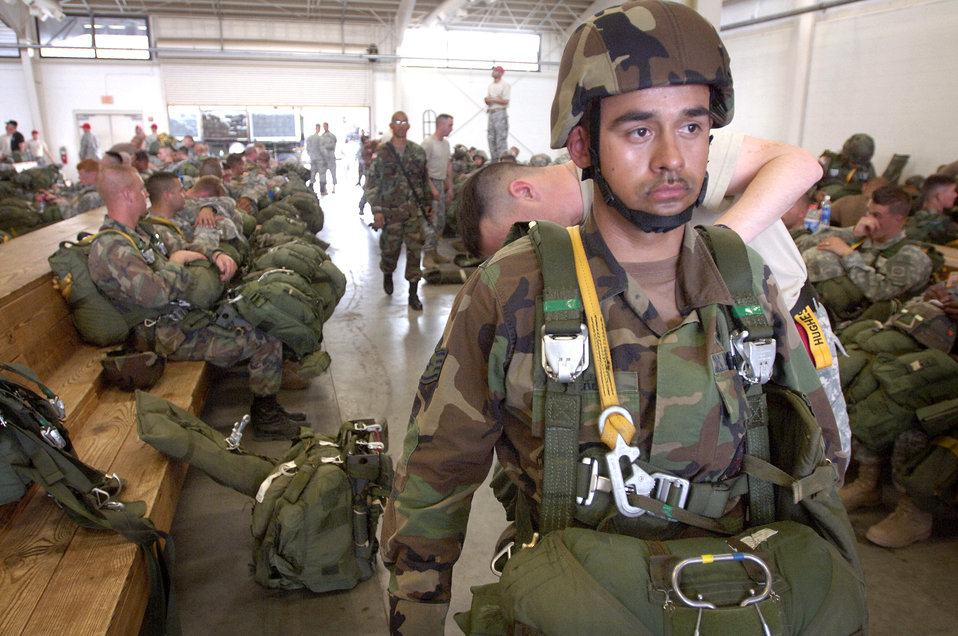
Airborne Airmen, Soldiers train together

Staff Sgt. Flavio Perez has his chute rigging inspected by jumpmaster Army Lt. Col. William Hughes before a jump at Fort Bragg, N.C., on Wednesday, April 25, 2006. Airmen and more than 2,000 Soldiers from the Army's 82nd Airborne Division were taking part in a Joint Forcible Entry Exercise. Sergeant Perez is an airborne electrical systems journeyman with the 820th Red Horse Squadron at Nellis Air Force Base, Nev. Thirty other jump-qualified Air Force engineers, firefighters and security forces Airmen assisted in security and rapid runway repair.